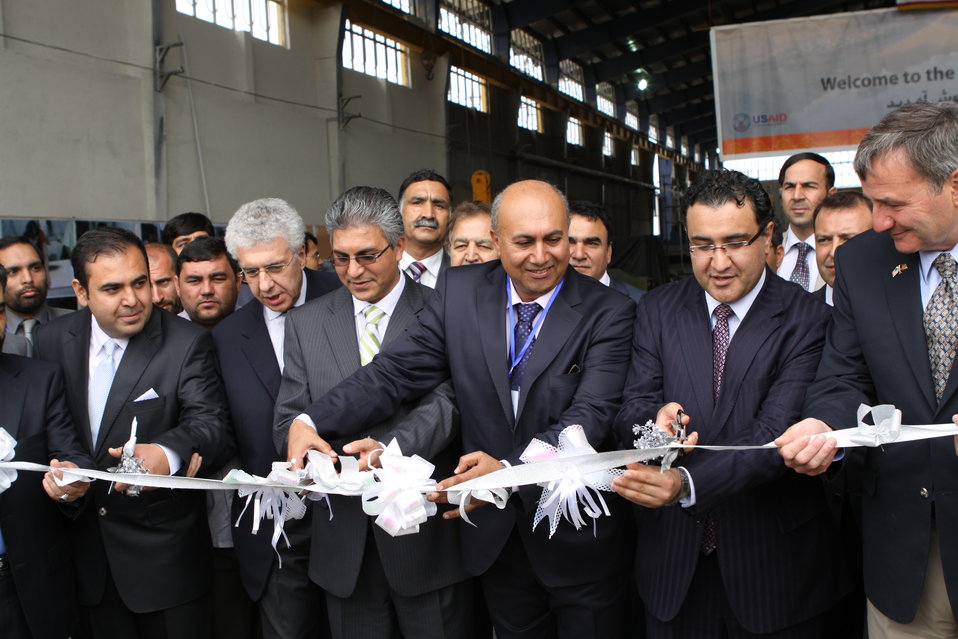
100525 Hirat Marble Conference 067